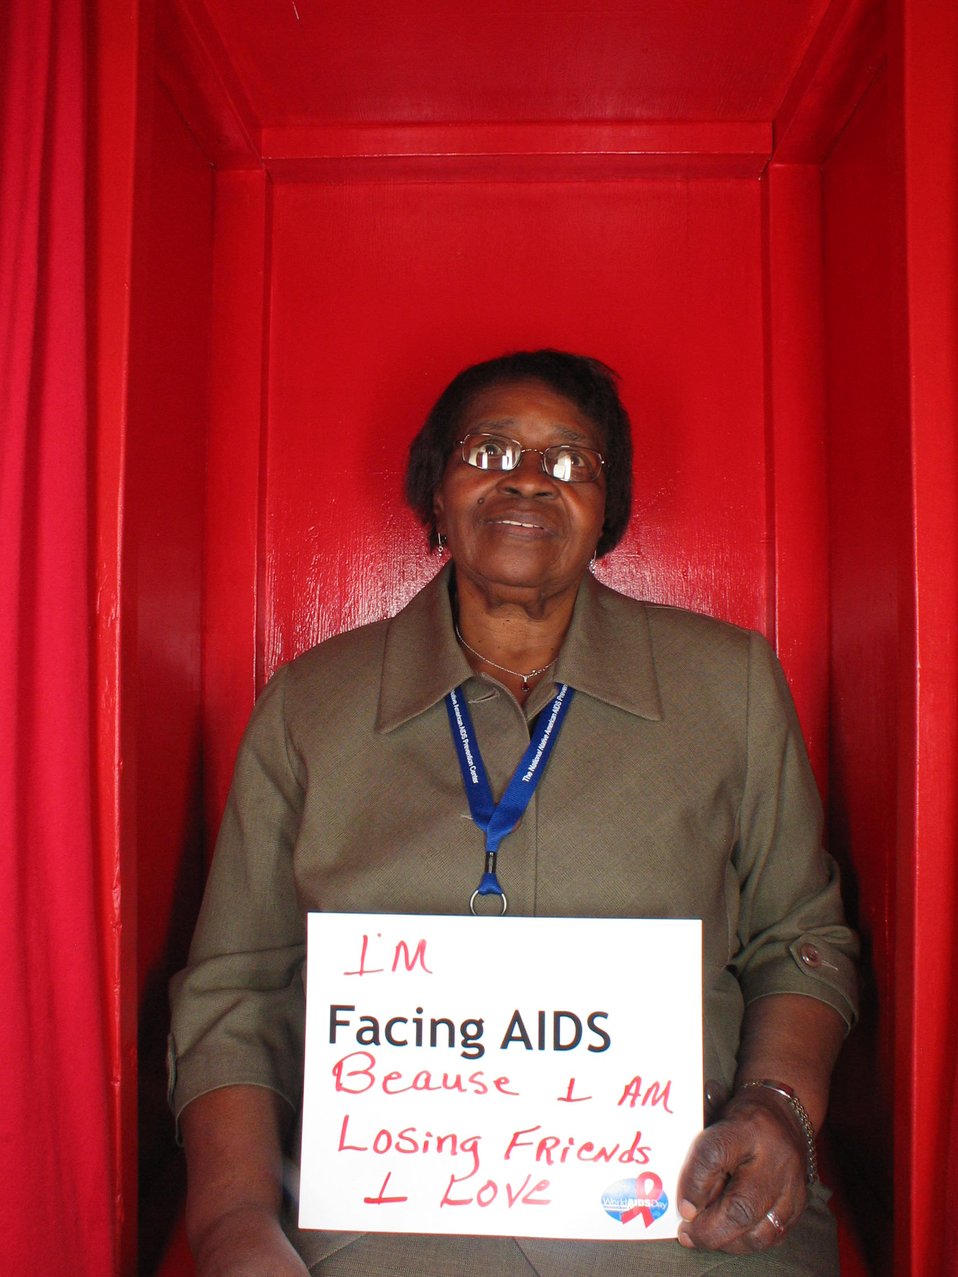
I'm Facing AIDS because I am losing friends I love